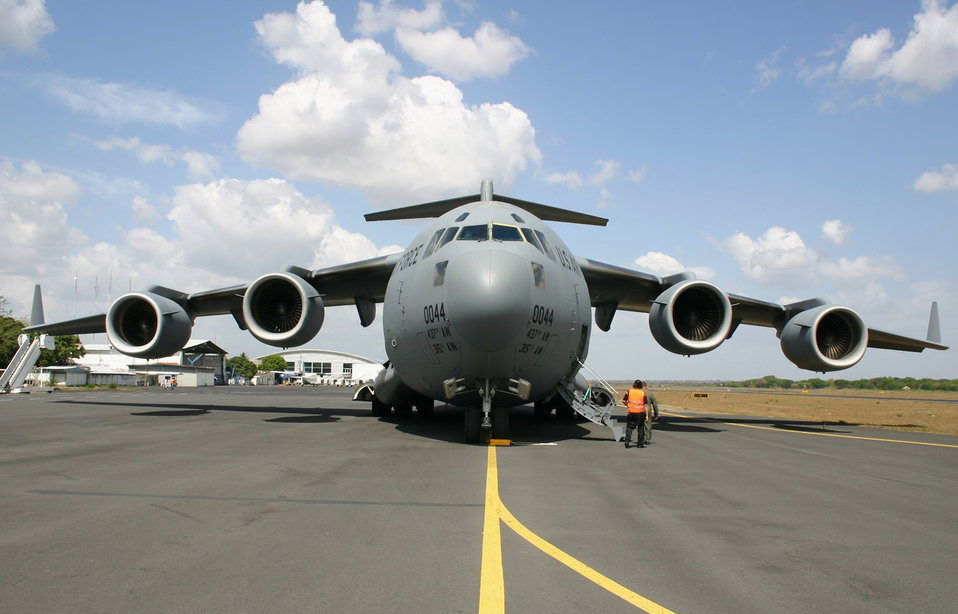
Airmen deliver 30,000 H1N1 prevention kits to South America

A C-17 Globemaster III from the 437th Airlift Wing at Charleston Air Force Base, S.C., sits on the ramp of Managua International Airport in Nicaragua May 9, after its crew offloaded cargo during a mission to deliver personal protective kits to help reduce the spread of the H1N1 influenza virus. The kits are part of a U.S. Agency for International Development shipment to Haiti, Guatemala, Honduras, El Salvador, Nicaragua and Belize to help these nations prepare for a potential outbreak of the H1N1 influenza virus.